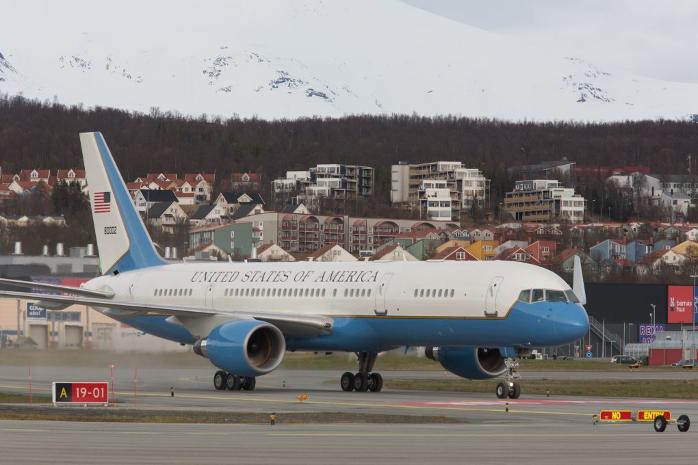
Secretary Clinton Arrives in Tromso

U.S. Secretary of State Hillary Rodham Clinton arrives in Tromso, Norway, on June 1, 2012.